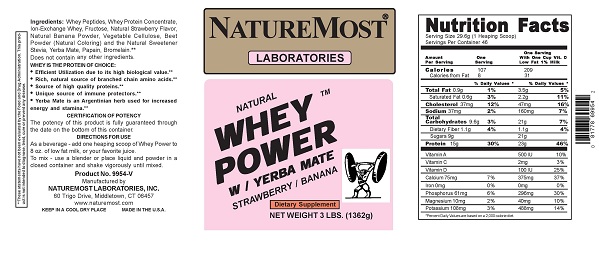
RECALLED - NatureMost Whey

October 23, 2013 – Product Recall – NATUREMOST LABORATORIES ISSUES ALLERGY ALERT ON UNDECLARED ALLERGENS IN PRODUCT.